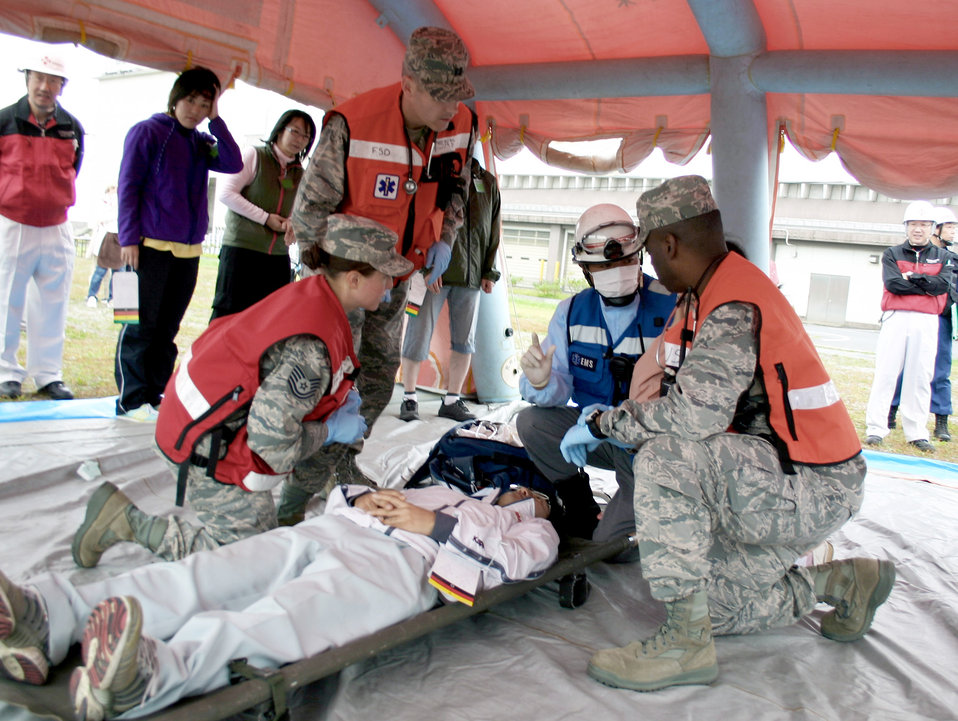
Misawa EX

Capt. Michael Brough, Tech. Sgt. Sarah Ortega-Russell and Maj. Mario Maxwell, discuss a simulated earthquake victim's injuries with a Japanese first responder Oct. 3 at Misawa City Sea Port during the 2010 Misawa City Disaster Drill. The bilateral exercise included Misawa City and Aomori Prefecture government agencies, Japanese Ground and Air Self-Defense Forces in northern Japan, and 35th Fighter Wing personnel. Captain Brough, Sergeant Ortega-Russell and Major Maxwell are emergency responders with the 35th Medical Operations Squadron.